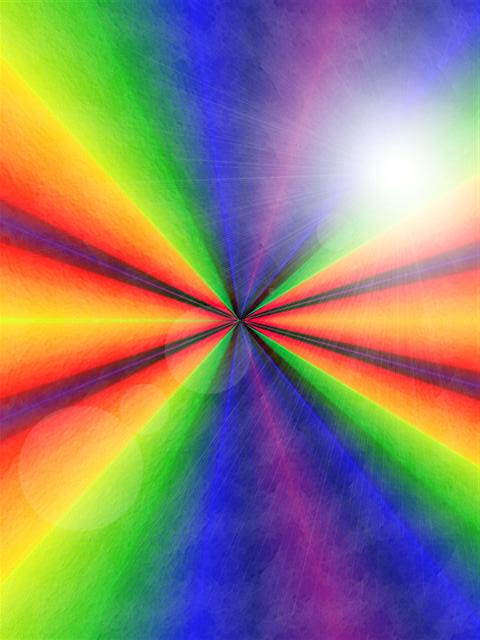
graphic by member ianmacm.